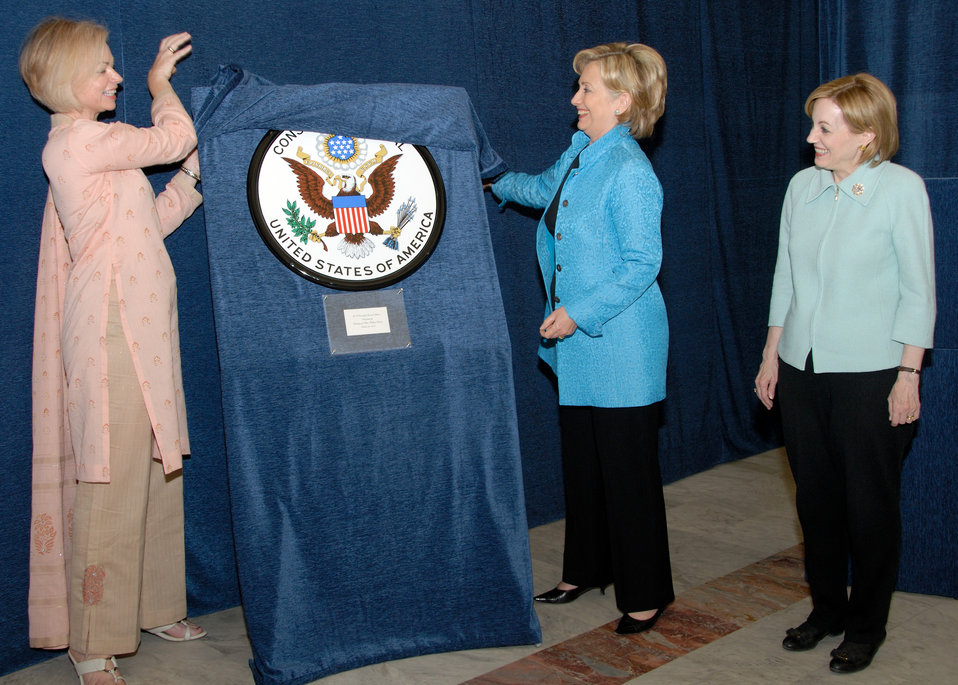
Secretary Clinton Unveils Consulate General Seal in Lahore

U.S. Secretary of State Hillary Rodham Clinton and U.S. Consul General Carmela Conroy unveil the new Consulate General seal at a ceremony held at the U.S. Consulate General in Lahore, Pakistan October 29, 2009.